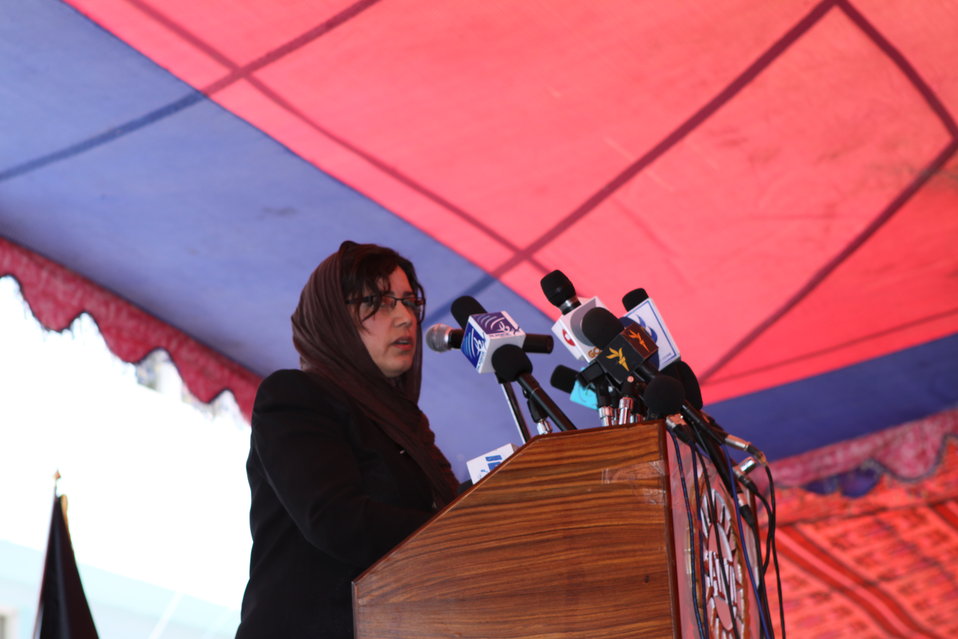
100522 ATVI Graduation 094